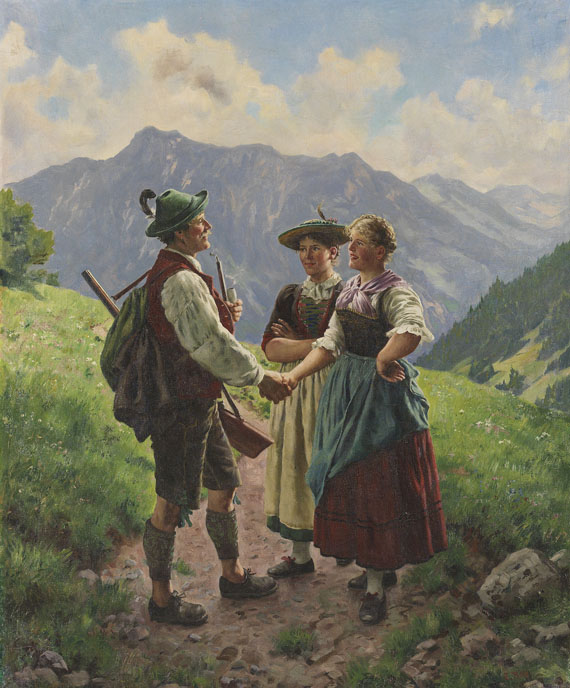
Die Begegnung. Öl auf Leinwand. 110 x 91 cm